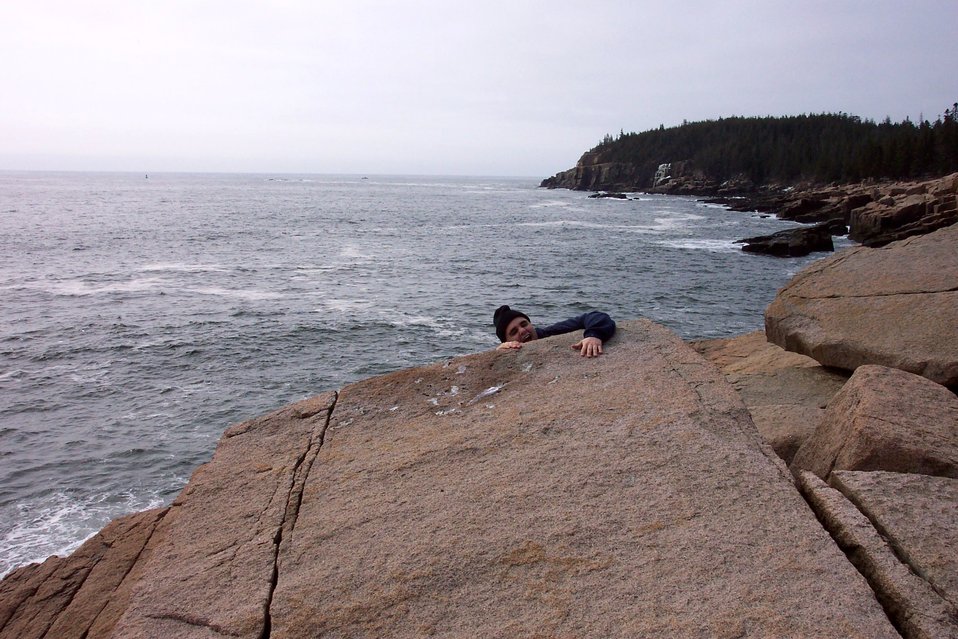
You have to watch your step along the cliffs of Acadia National Park.